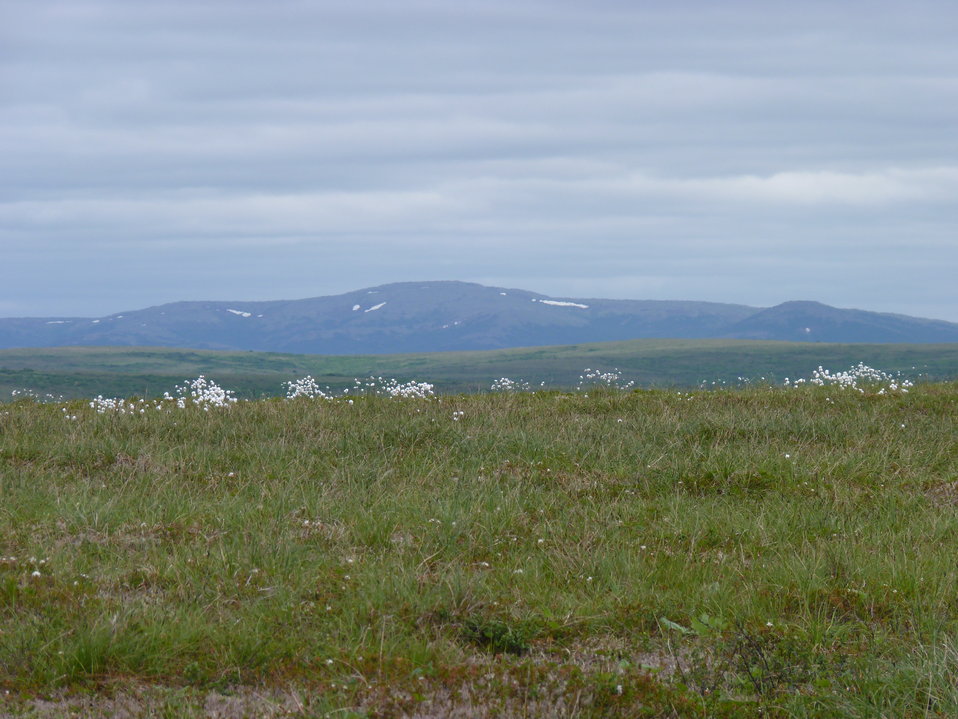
Andreafsky Wilderness, Yukon Delta National Wildlife Refuge